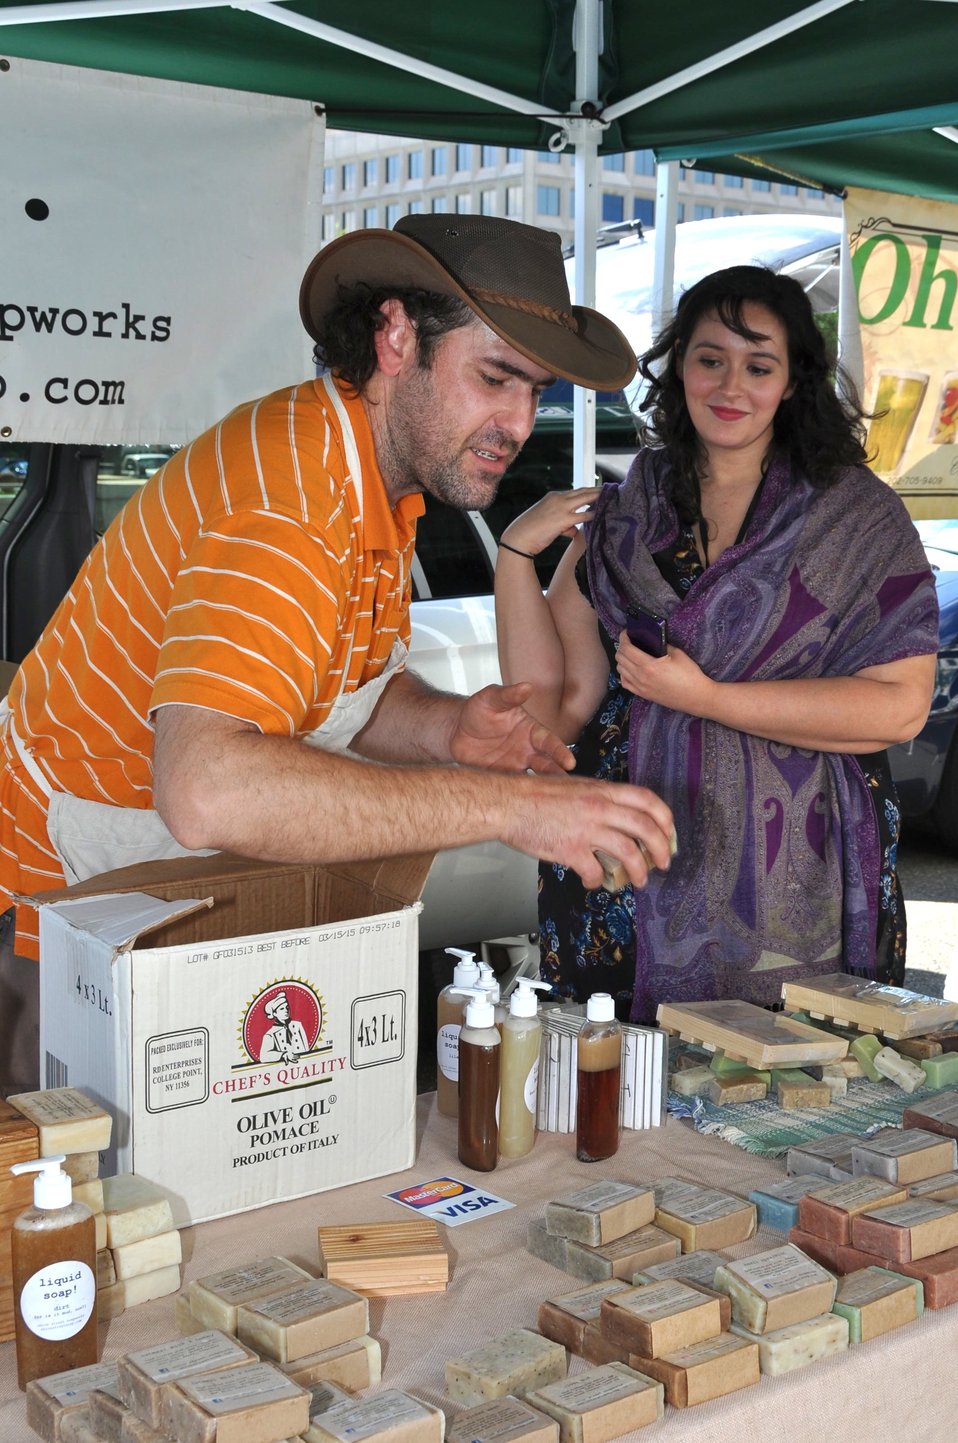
Soap Vendor at the USDA Farmers Market

A vendor helps a customer find the right product on his table wat the USDA Farmers Market.